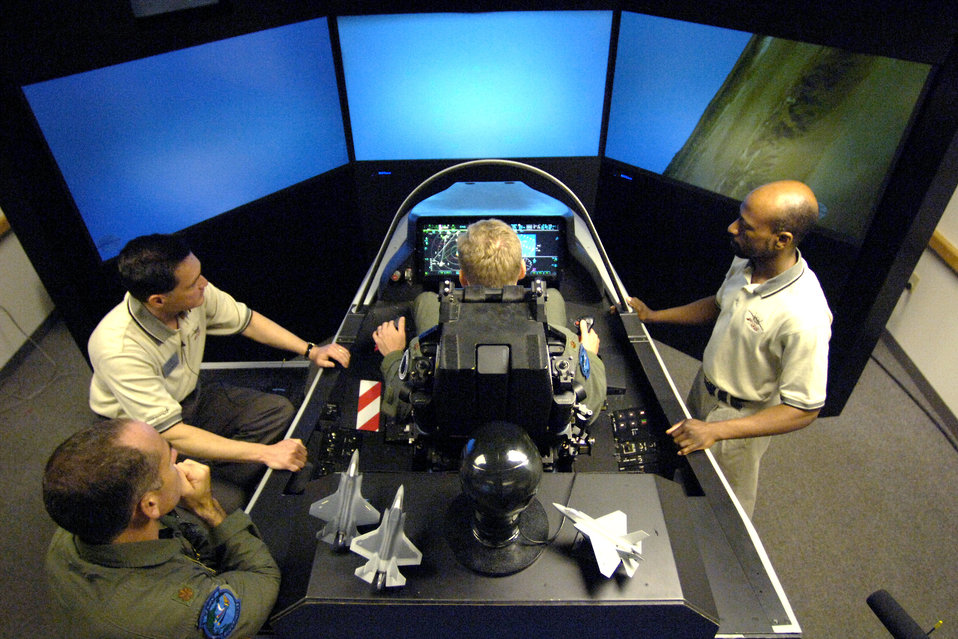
JSF

HICKAM AIR FORCE BASE, Hawaii (AFPN) -- Maj. Don Borchelt flies the F-35 Joint Strike Fighter simulator here. The simulator demonstrates the advanced capabilities of the F-35 -- the joint fighter of the 21st century. Major Borchelt is from the Headquarters Pacific Air Force advanced programs office.